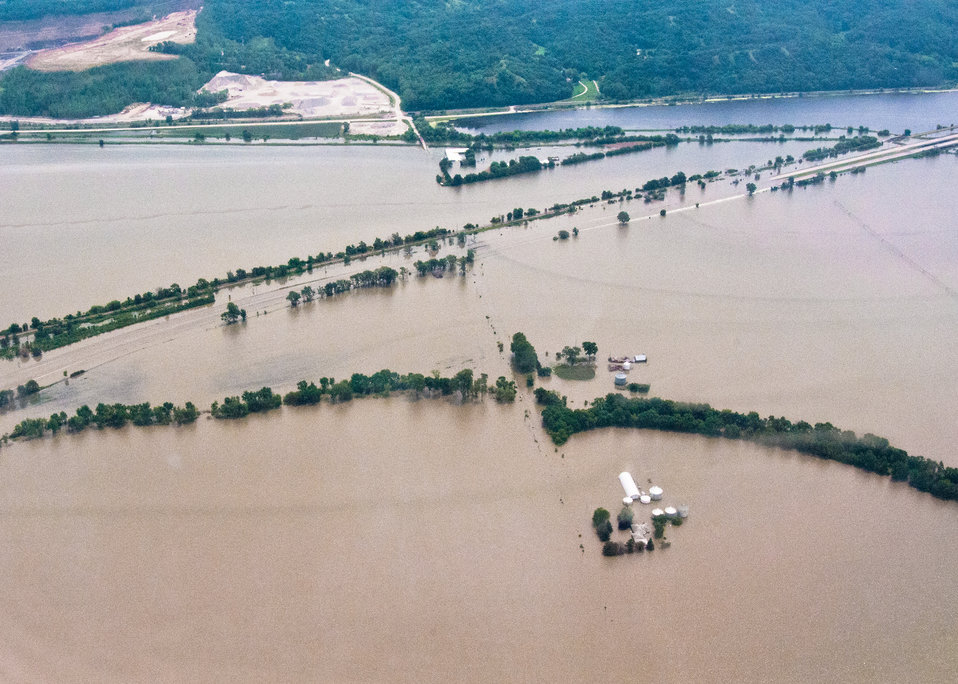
The Missouri river flooded hundreds of acres in Nebraska and Iowa. Agriculture Secretary Tom Vilsack visited the area on Friday, June 17, 2011, and spoke to agriculture producers and community leaders. The goal of the meetings was to get a firsthand look and provide that information back to Washington necessary to better deliver disaster programs expeditiously to effectively respond to this disaster. The United States Department of Agriculture agencies have programs to assist producers as they assess recovery efforts to assist with recovery in rural areas reeling from a natural disaster. USDA and the entire federal family have been working with state and local officials to provide relief to residents, farmers, ranchers and businesses.